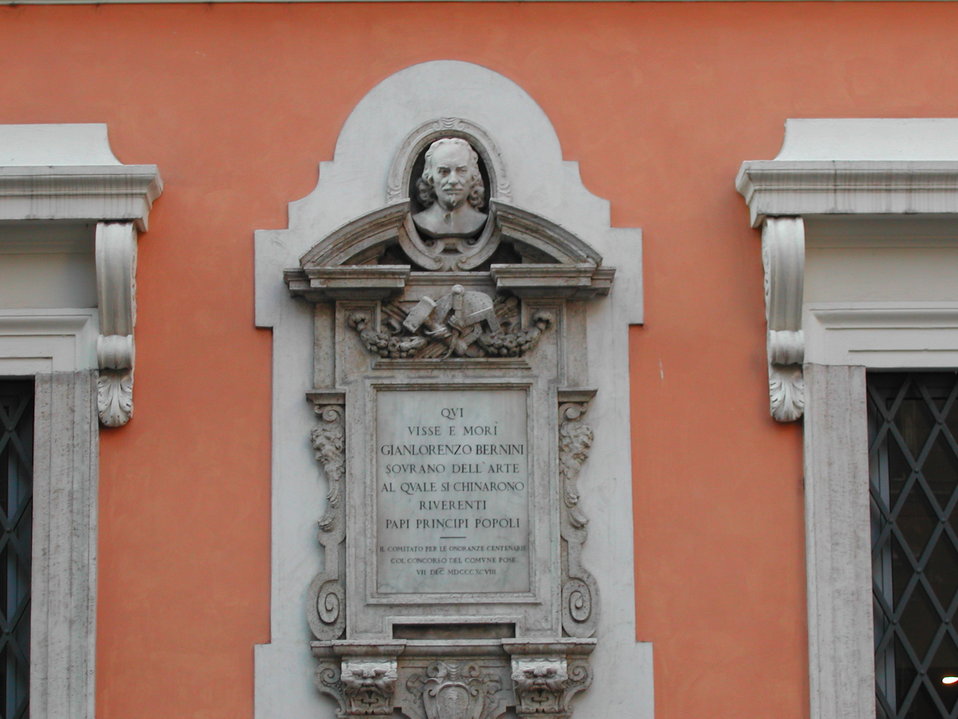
01 Bernini a Capolecase